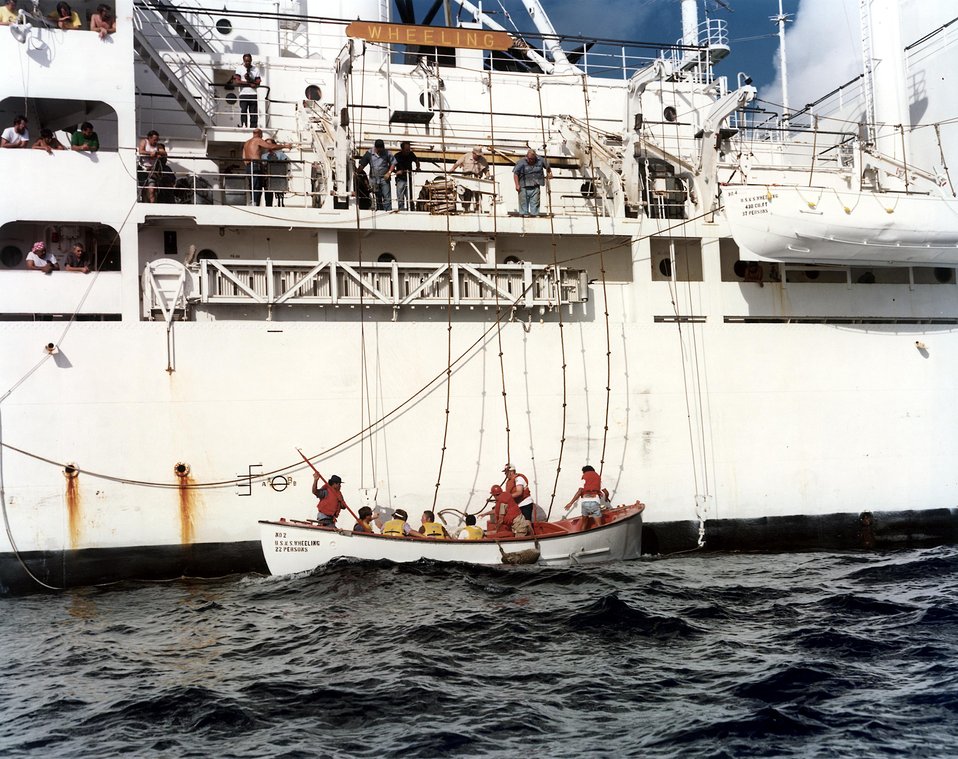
Millstone Nuclear Power Station, Units 1 and 2, located on Millstone Point on the edge of Long Island Sound at Waterford, CT.